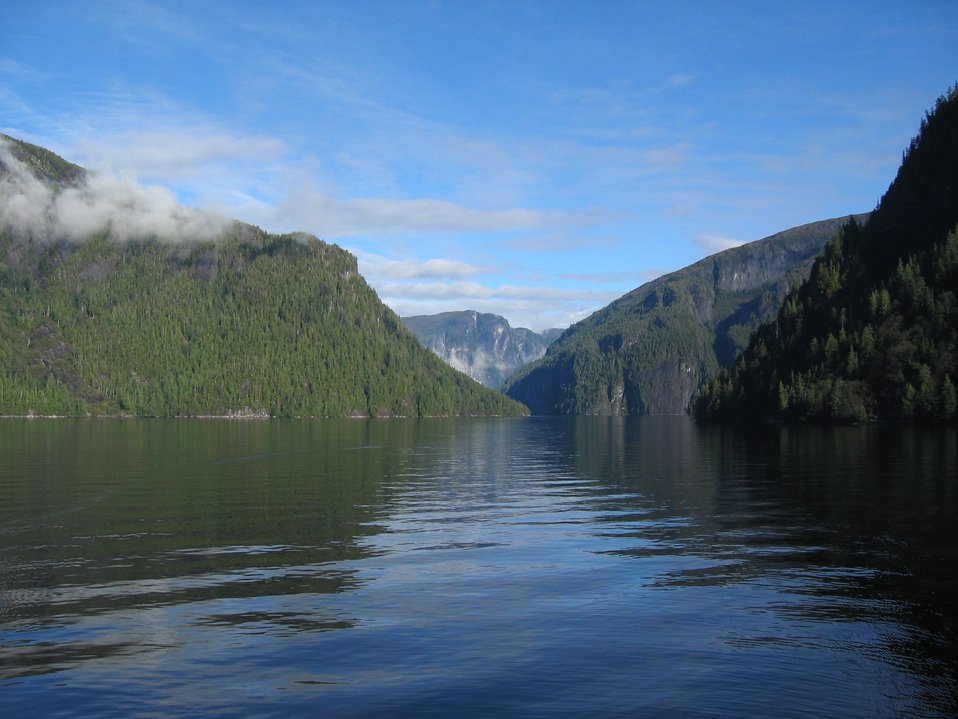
Labyrinthine waterways dissecting the mountains of SE Alaska.